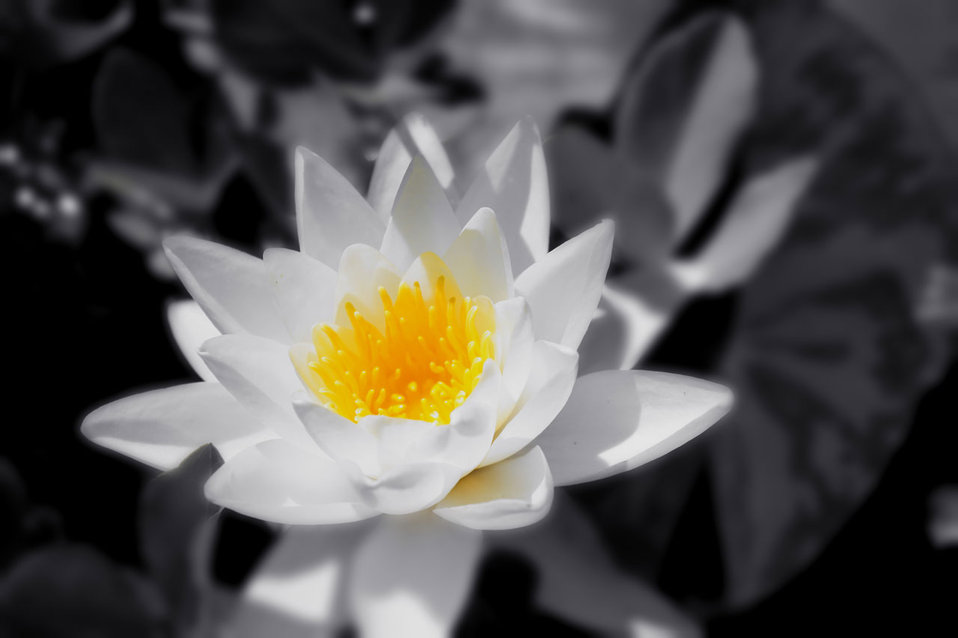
Flower black and white.